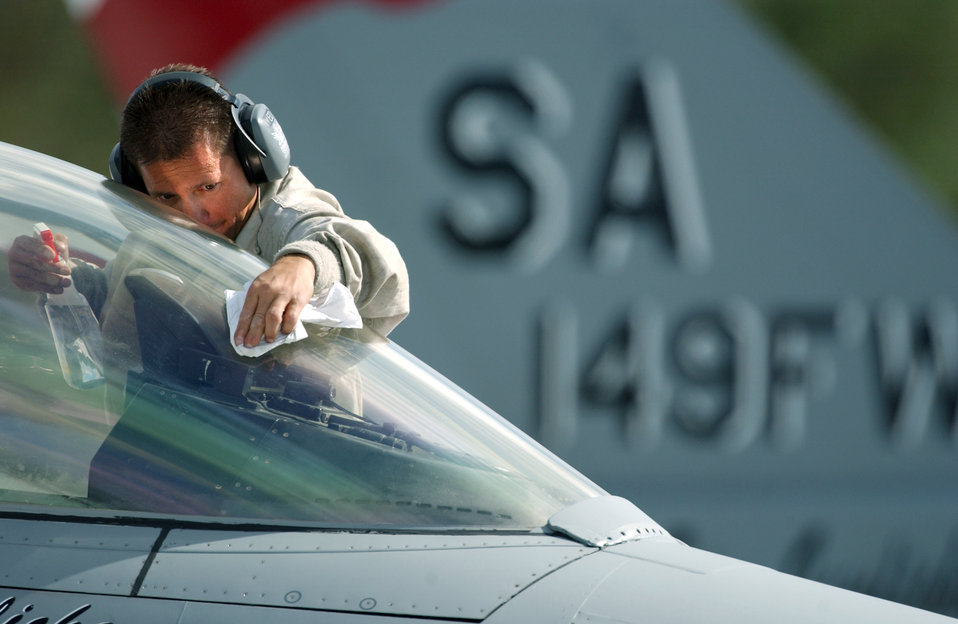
Squeaky clean

LASK AIR BASE, Poland -- Master Sgt. Donald Yedlicka cleans an F-16 Fighting Falcon canopy before a training flight here. He is a crew chief assigned to the Texas Air National Guard's 182nd Fighter Squadron at Lackland Air Force Base. The Texas Airmen are here to familiarize Polish airmen with the aircraft's capabilities along with its day-to-day operations and maintenance.